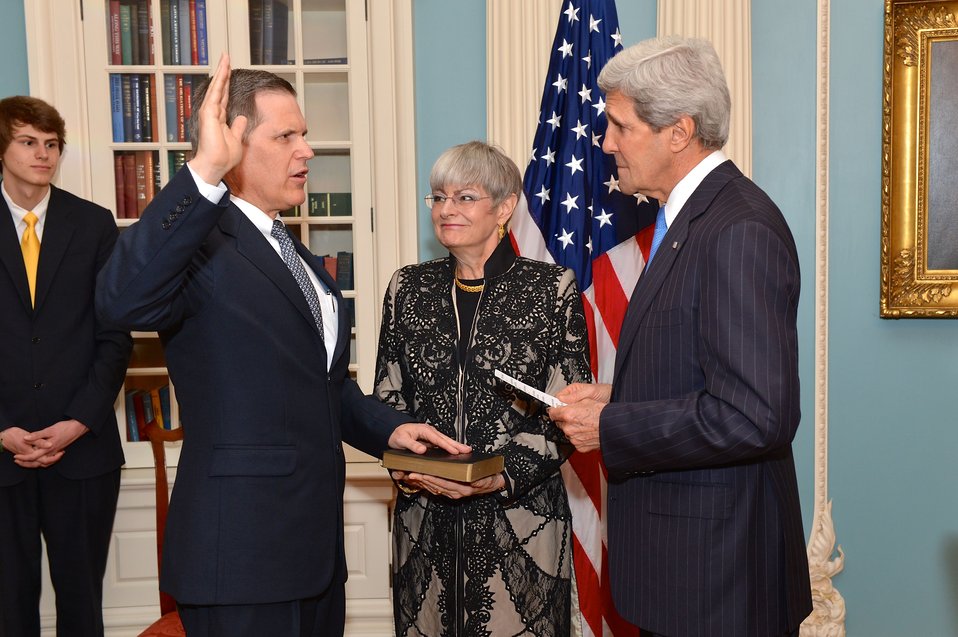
Secretary Swears in Ambassador Tueller

With his family looking on, U.S. Secretary of State John Kerry swears in Ambassador Matthew Tueller as the U.S. Ambassador to Yemen, at the U.S. Department of State in Washington, D.C., on May 8, 2014.